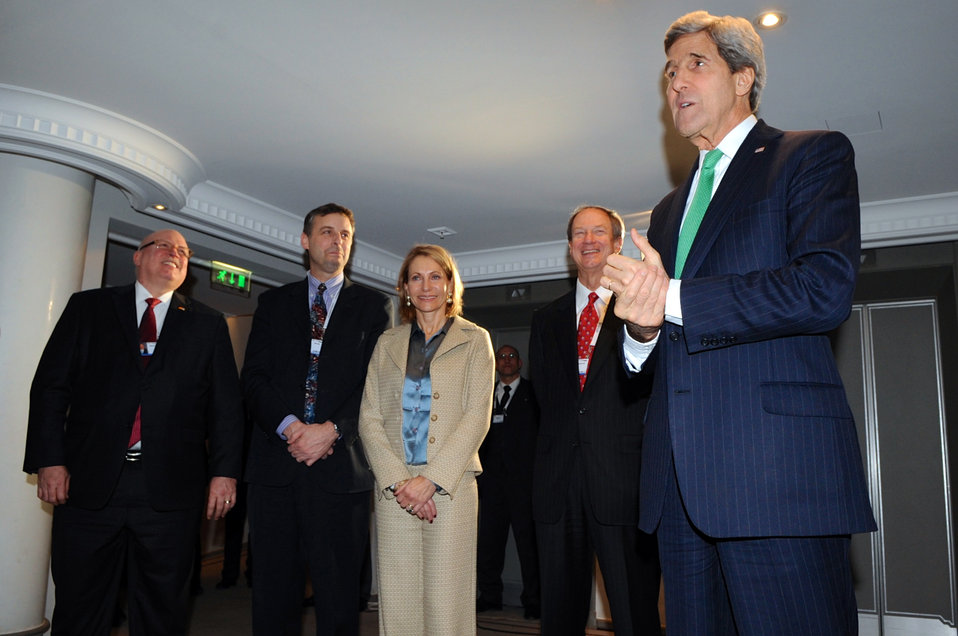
Secretary Kerry Shows Gratitude to Employees who Helped Support the Munich Security Conference

U.S. Secretary of State John Kerry, joined by U.S. Ambassador to German John Emerson, his wife, Kimberly, Munich Consul General Bill Moeller, and Berlin Deputy Chief of Mission James Melville Jr., thanks State Department employees stationed around Germany who supported the Munich Security Conference in Munich on February 1, 2014.